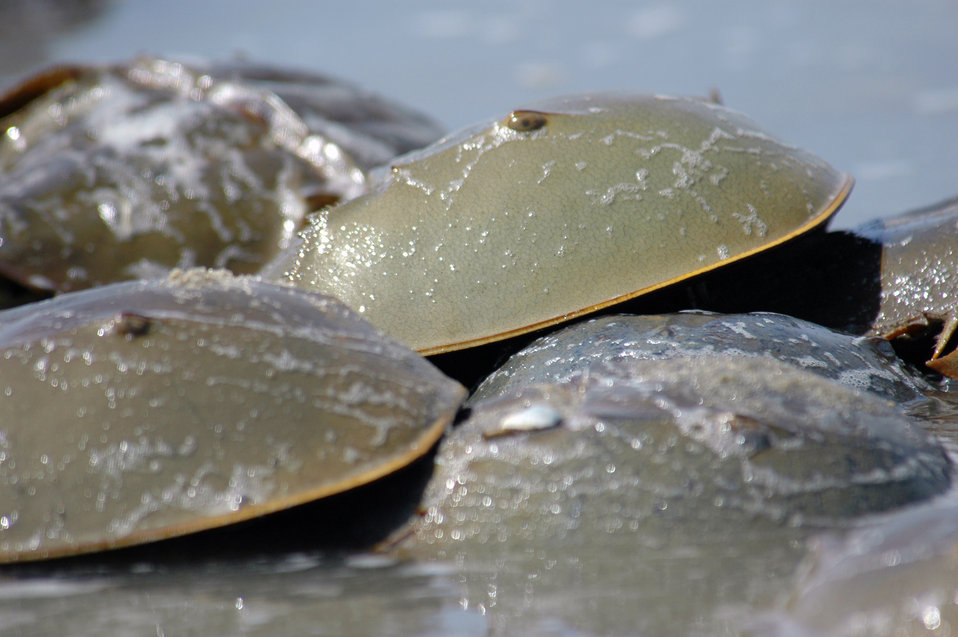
Horseshoe Crab

Mispillion Harbor, Delaware.